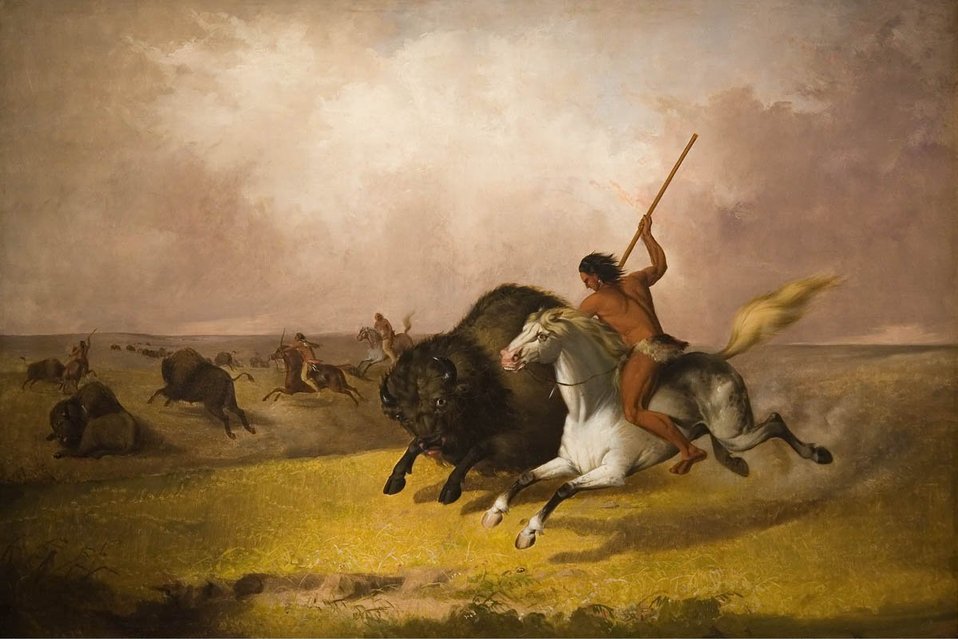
'Buffalo Hunt on the Southwestern Prairies', oil on canvas painting by John Mix Stanley